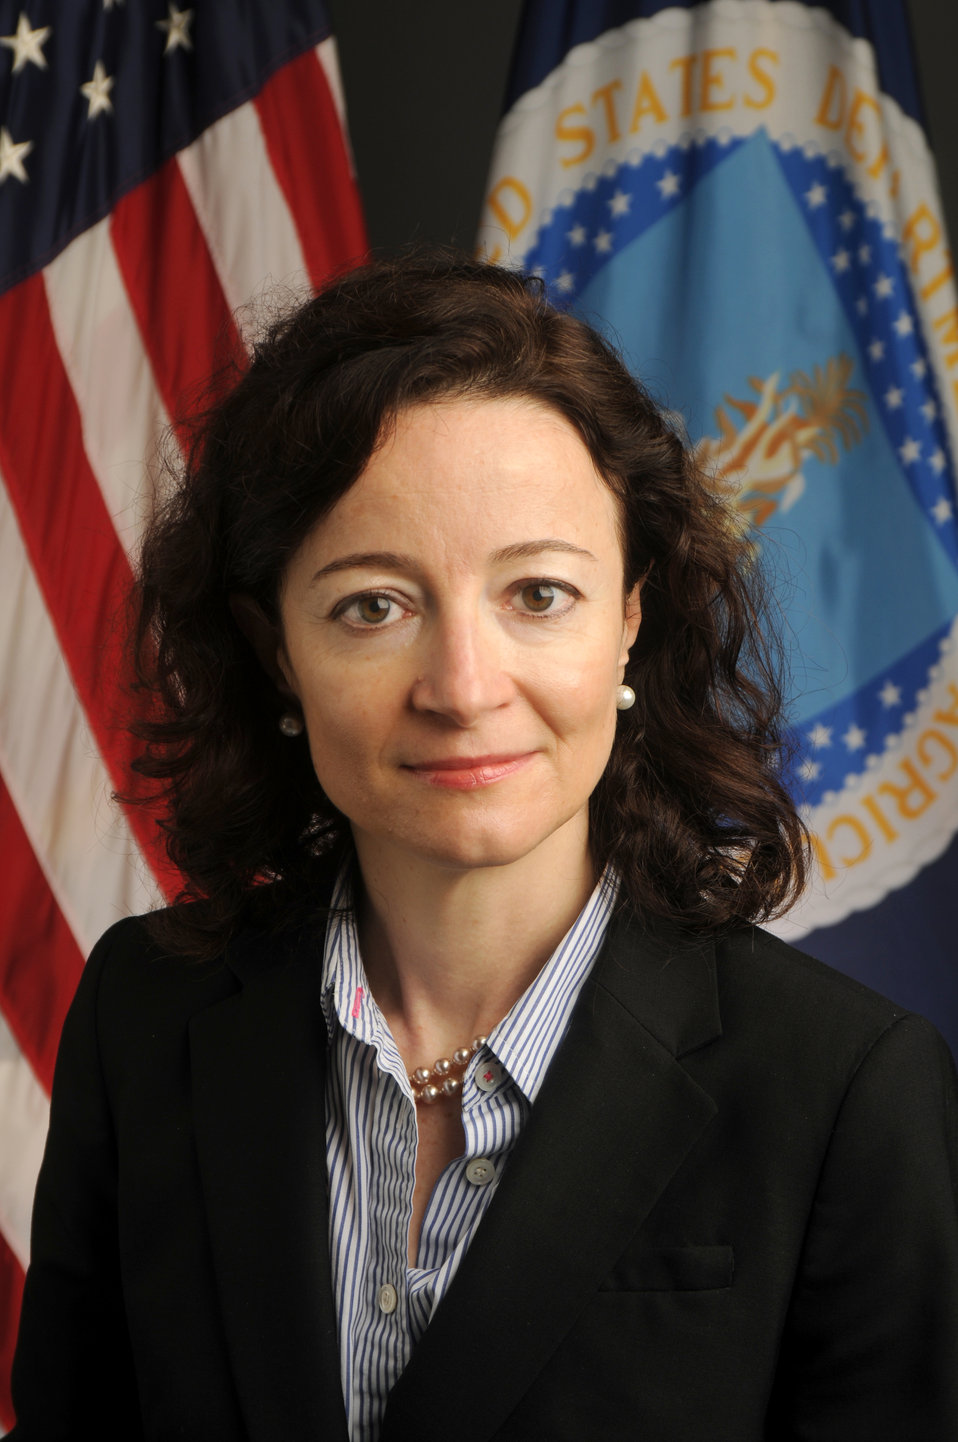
10di1067-011 Deputy Administrator Rural Utility Service Jessica Zufolo

Portrait Deputy Administrator RUS Jessica Zufolo.